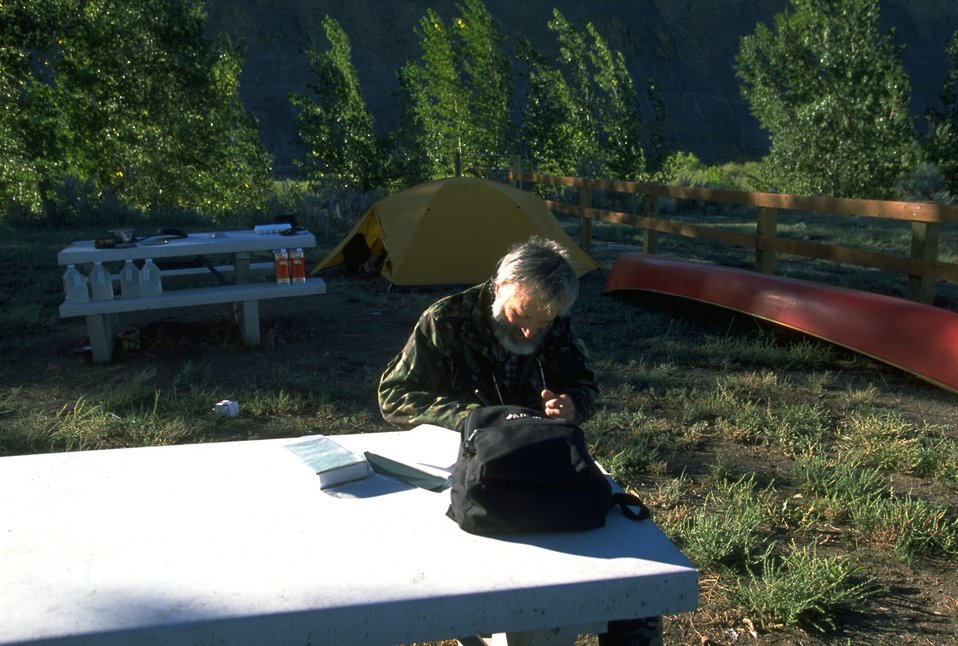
Canoe launch campgrounds at Fort Benton fairgrounds